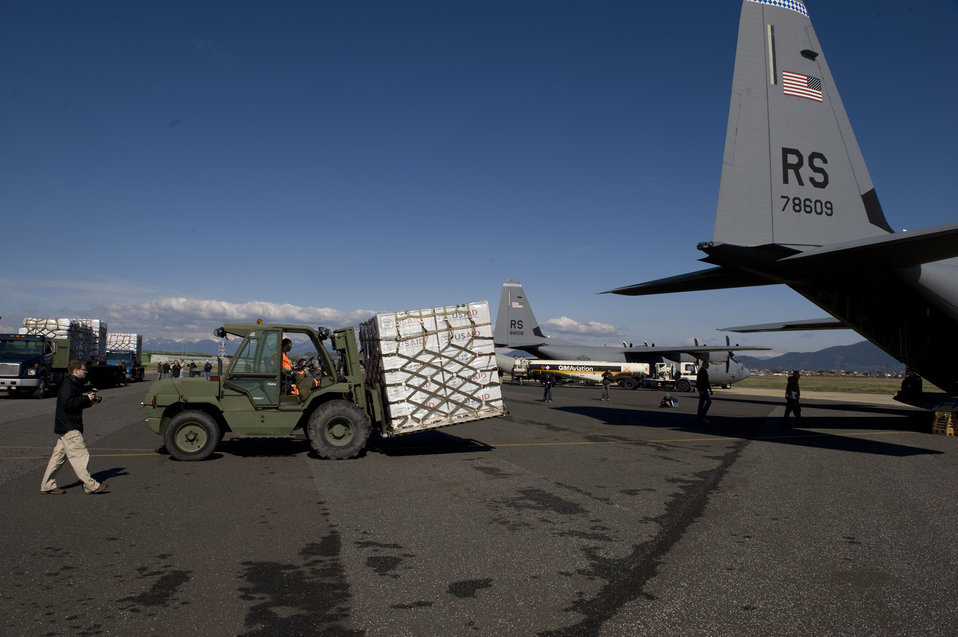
US Aid to Tunisia

March 4th 2011, U.S. Airmen from the 435th Air Mobility Squadron out of Ramstein Air Base load blankets, tarps and water containers onto C-130 aircraft in Pisa, Italy. These aircraft will then fly these supplies to Tunisia. The U.S. Government is working intensely with the International community to meet the humanitarian needs of the Lybian people and others in the country who fled across the borders. U.S. Army Photo by Staff Sgt. Brendan Stephens. Approved for Public Release